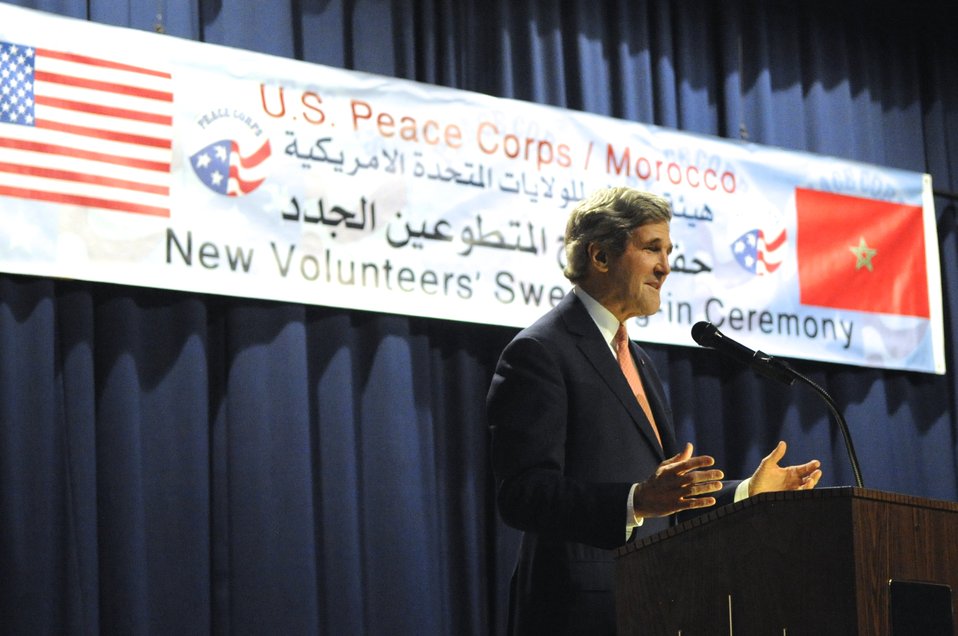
Secretary Kerry Thanks Peace Corps Volunteers for Their Service in Morocco

U.S. Secretary of State John Kerry thanks over 100 incoming Peace Corps volunteers for their service to the country and the world before swearing them in during a ceremony in Rabat, Morocco, on April 4, 2014.